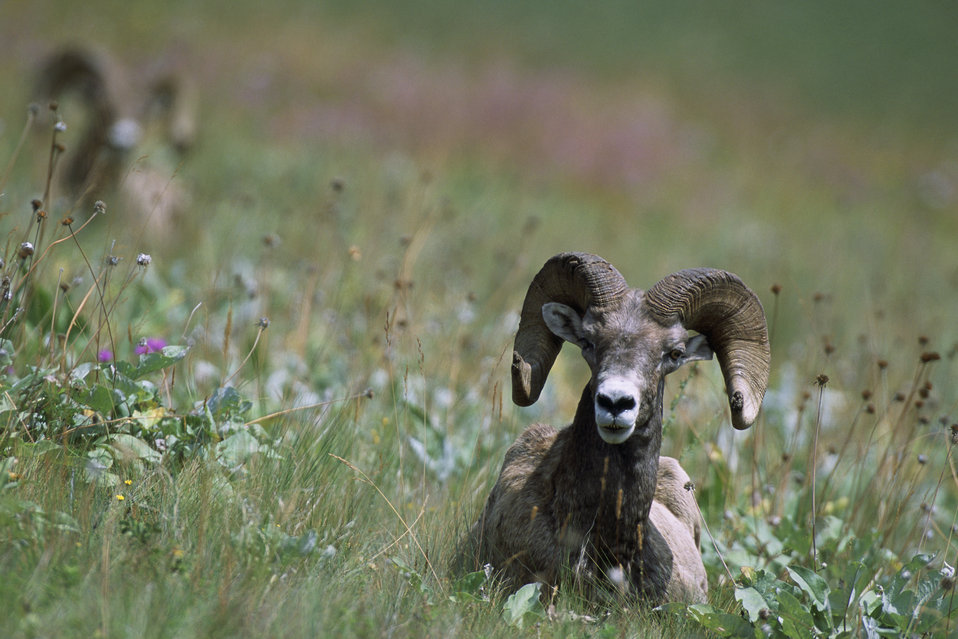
Bighorn sheep

Close view of male bighorn sheep laying in wildflowers.